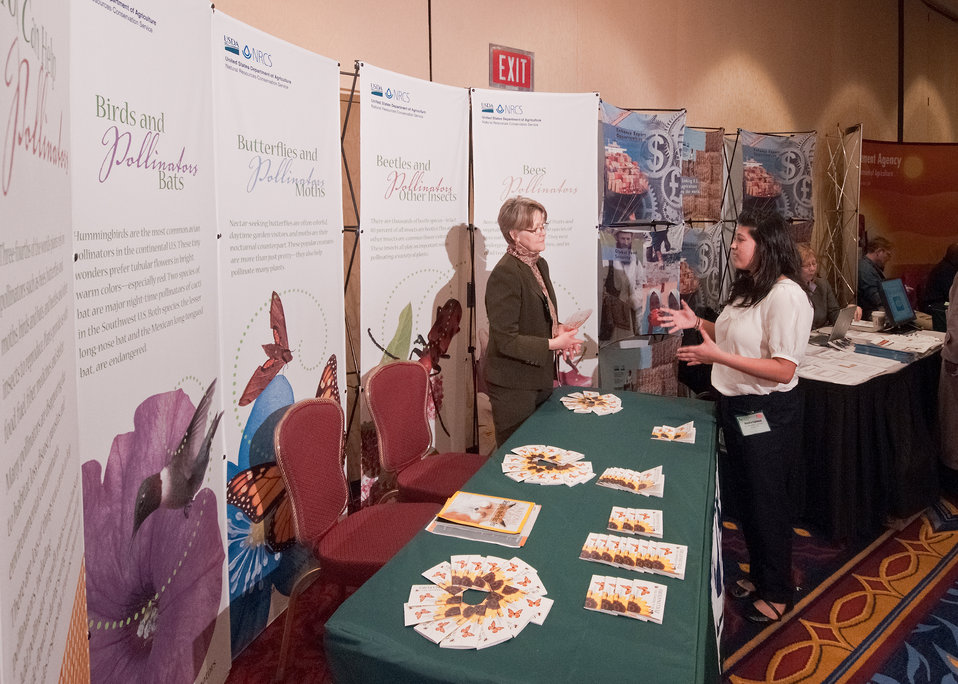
Jessica Espinoza (right), an Environmental Science and Policy major at St. Edwards University in Austin, Texas one of the 24 winners of the United States Department of Agriculture’s Agricultural Outlook Board Forum Student Diversity Program inquires about career opportunities from Rosemarie Philips (left), Natural Resources and Conservation Service, Public Affairs in the exhibit hall at the World Agricultural Outlook Board Forum in Crystal City, VA, on Thursday, February 24, 2011. The Student Diversity Program is in its fifth year. The program is conducted in partnership with the University of Maryland-Eastern Shore and sponsorship from CHS Inc., the Farm Credit, Deere and Company and USDA’s Economic Research Service. The purpose of the program is to expose junior and senior level college students throughout the United States to the many facets of USDA.